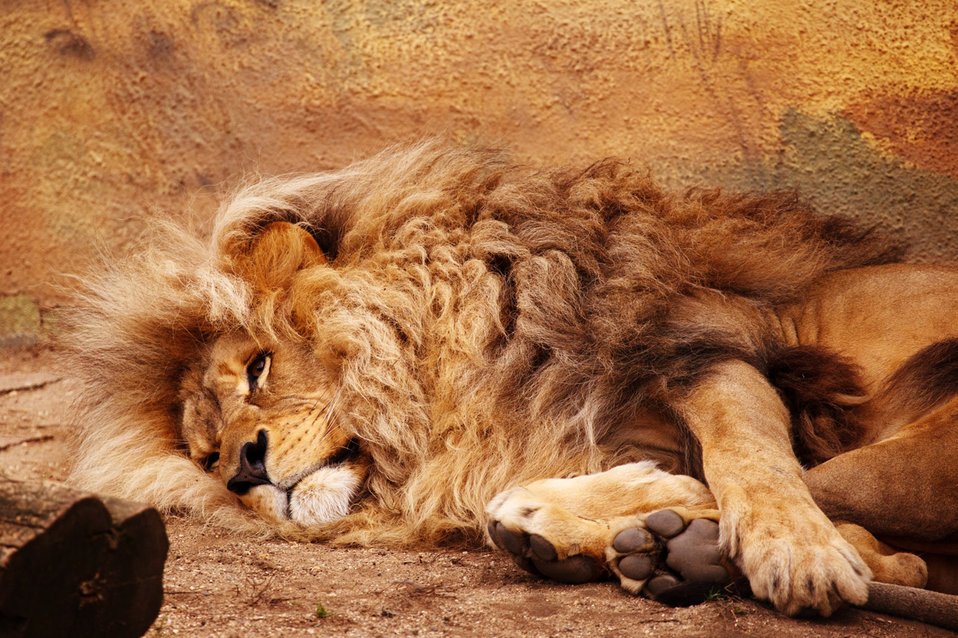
Lying lion

Big lion resting on the floor.